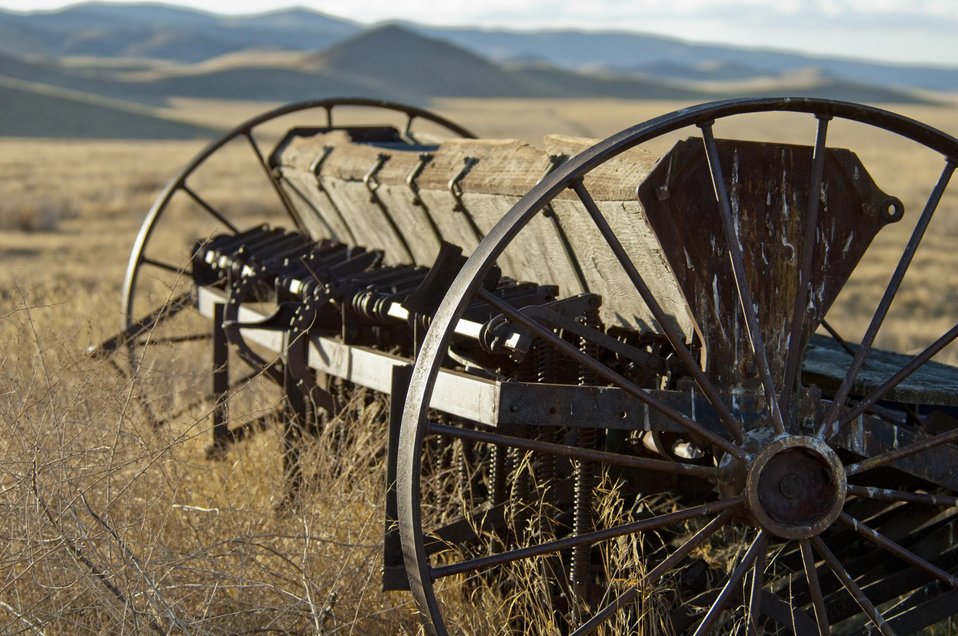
Farming Equipment left on the Carrizo Plain 1